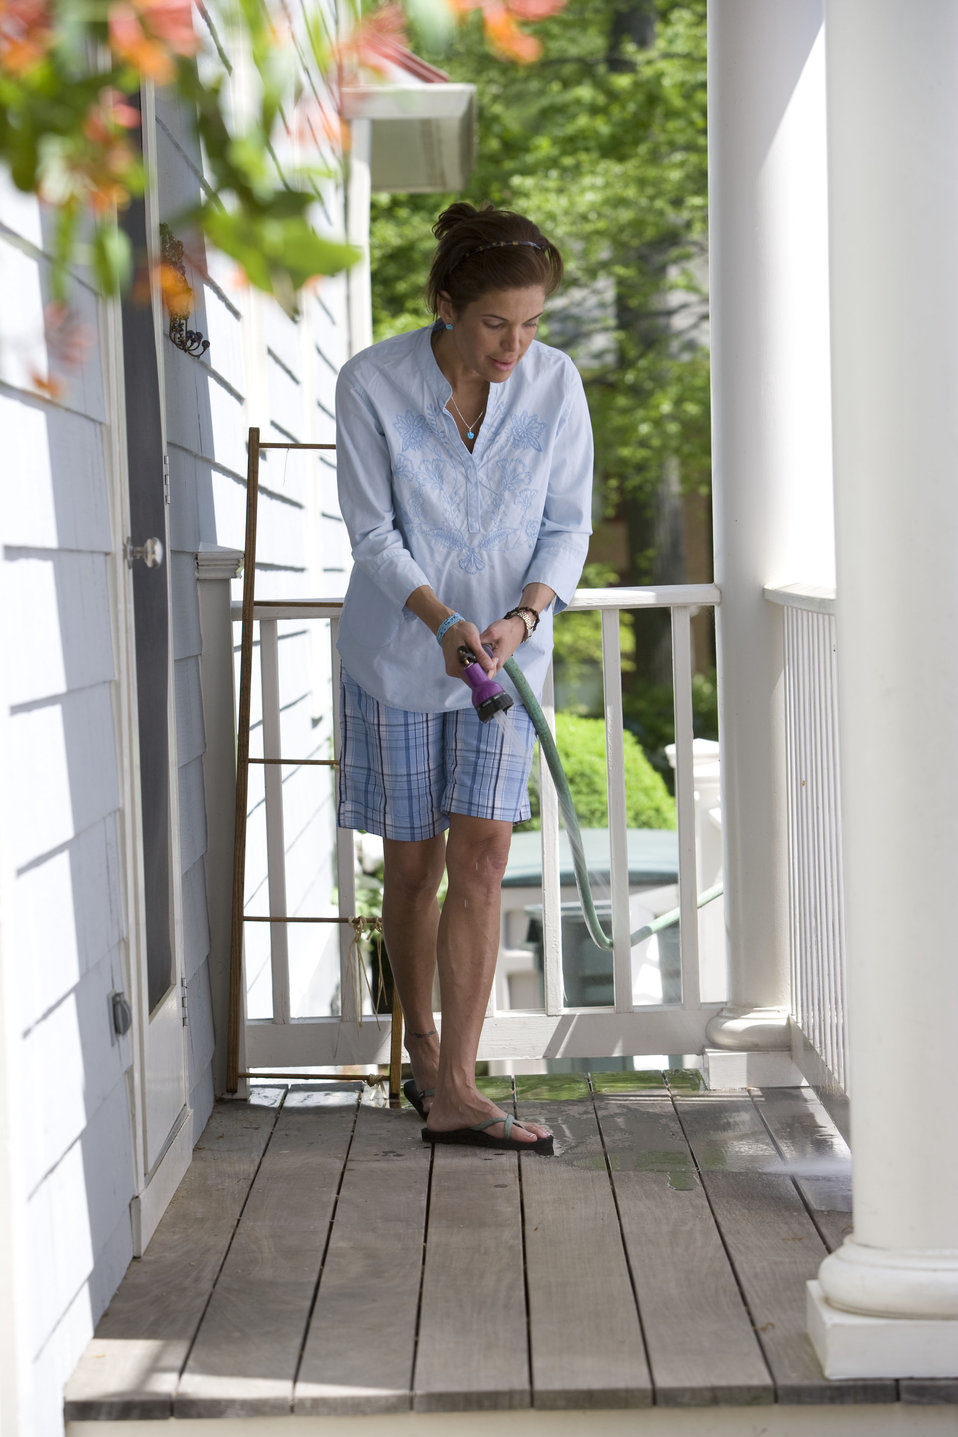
Home maintenance includes both the indoor, and as was the case here, outdoor environment, and is an ongoing process with which a homeowner need to keep up in order to provide for a healthy living space. Keeping your porch dust free reduces the amount of contaminants tracked into the house.